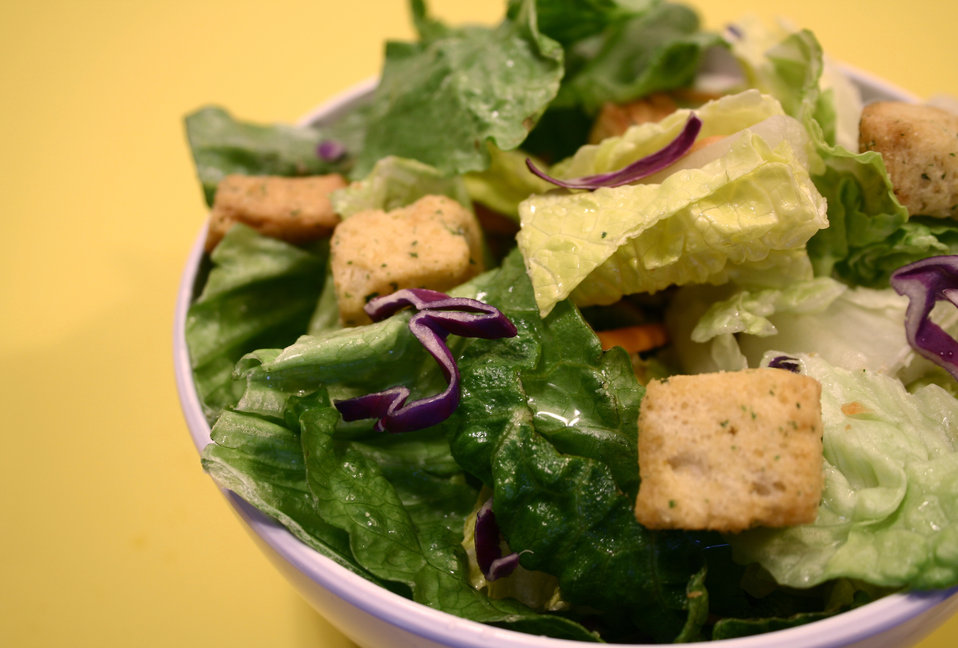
This photograph depicts a white ceramic bowl, which had been filled with a variety of lettuce leaves, croutons, and a salad dressing. The bowl had been set atop a yellow-colored tabletop. Most dark greens are good sources of Vitamin C and other nutrients. The rule of thumb is, usually, the darker the greens, the more nutritious the leaf.